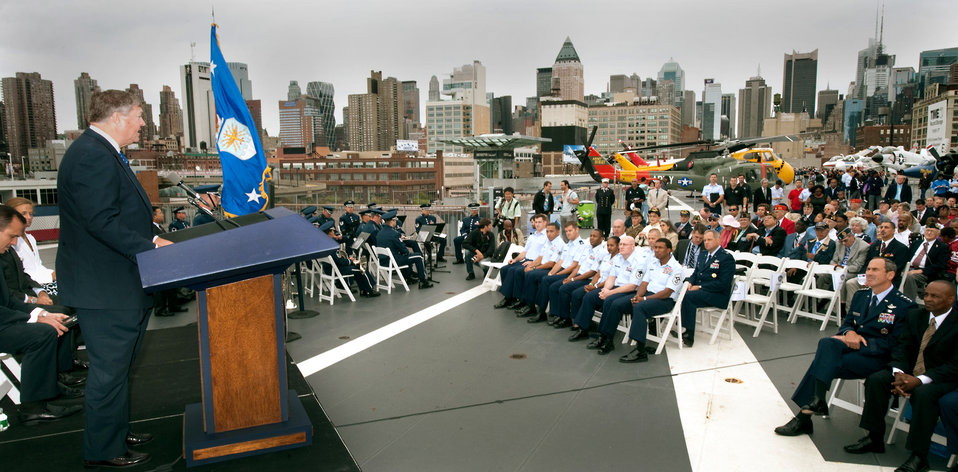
SecAF speaks at AF Week New York City

Secretary of the Air Force Michael Donley speaks during the Air Force Week-New York City proclamation ceremony at the USS Intrepid Sea, Air and Space Museum Aug. 24, 2010, in New York. The event was highlighted by a six-ship flyover by the Air Force aerial demonstration team, the Thunderbirds.